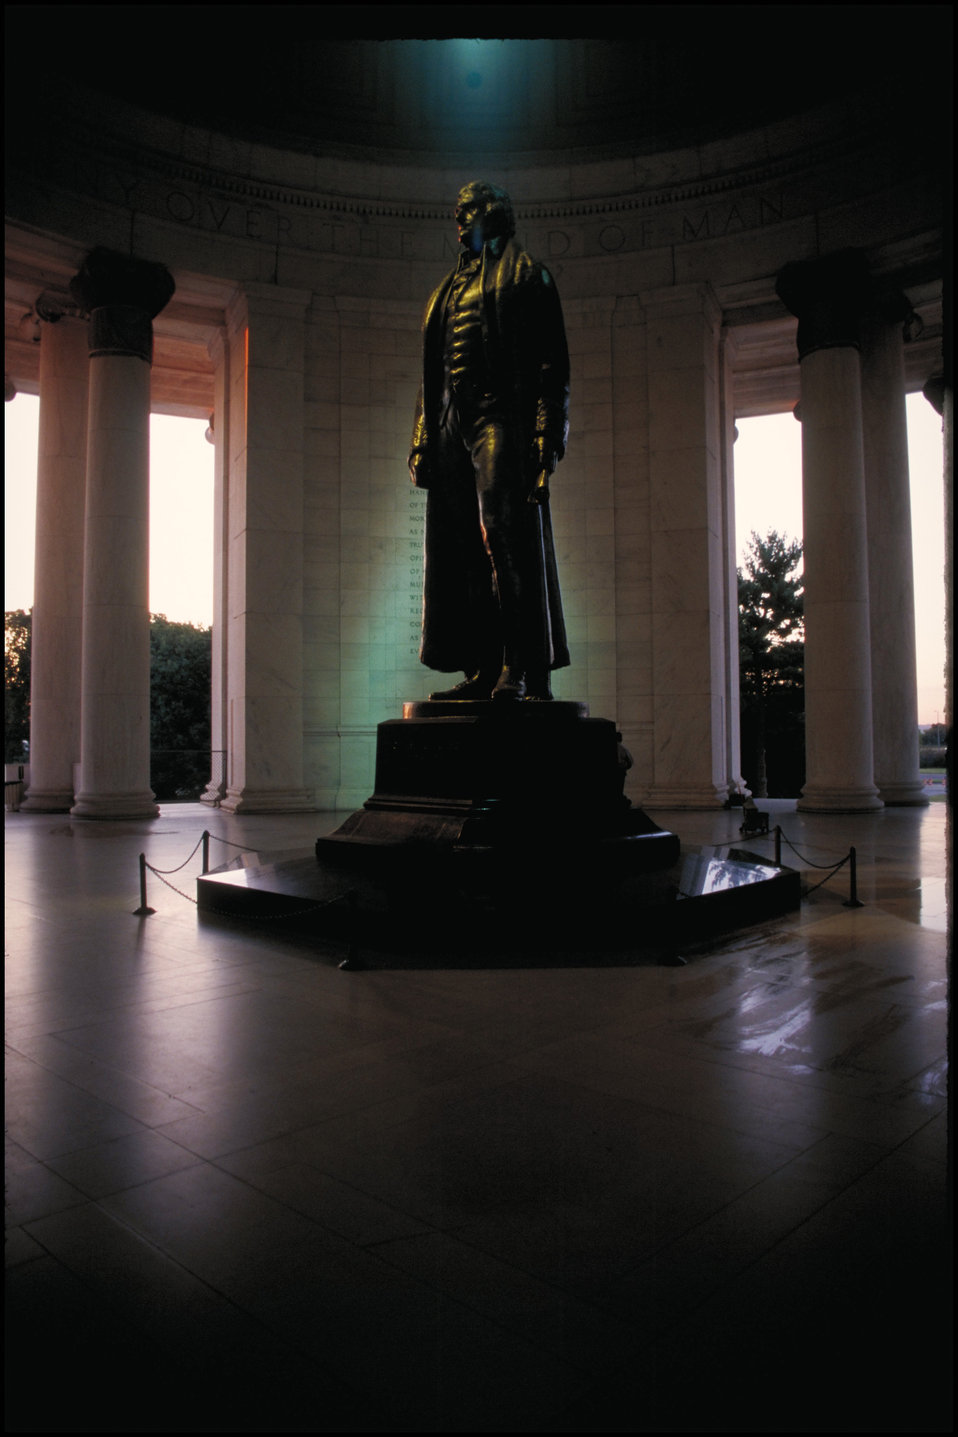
Jefferson Monument in Washington, DC.